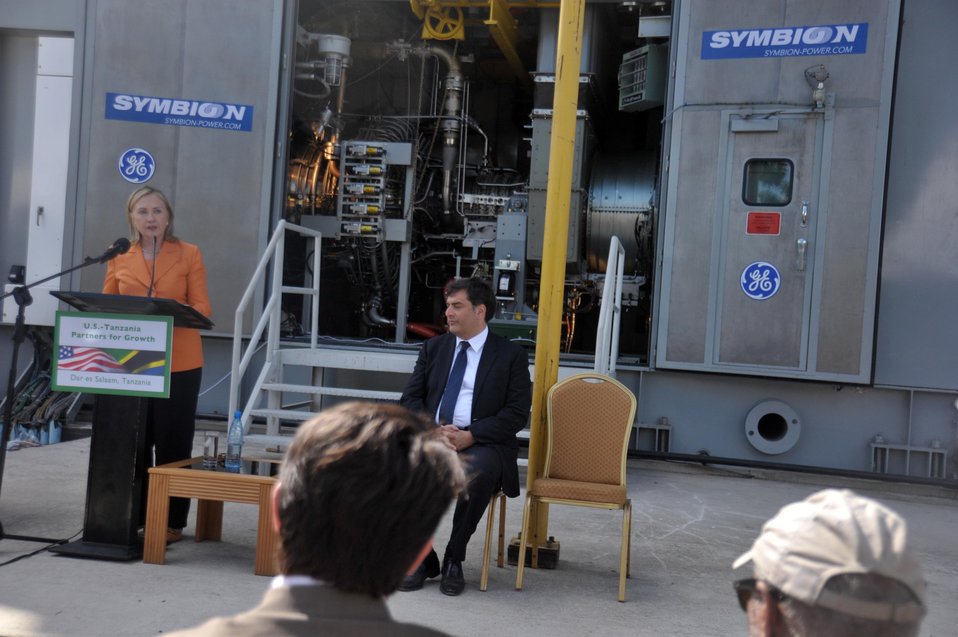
Secretary Clinton Delivers Remarks at the Symbion Power Plant

U.S. Secretary of State Hillary Rodham Clinton delivers remarks at the Symbion Power Plant in Dar es Salaam, Tanzania, on June 12, 2011.